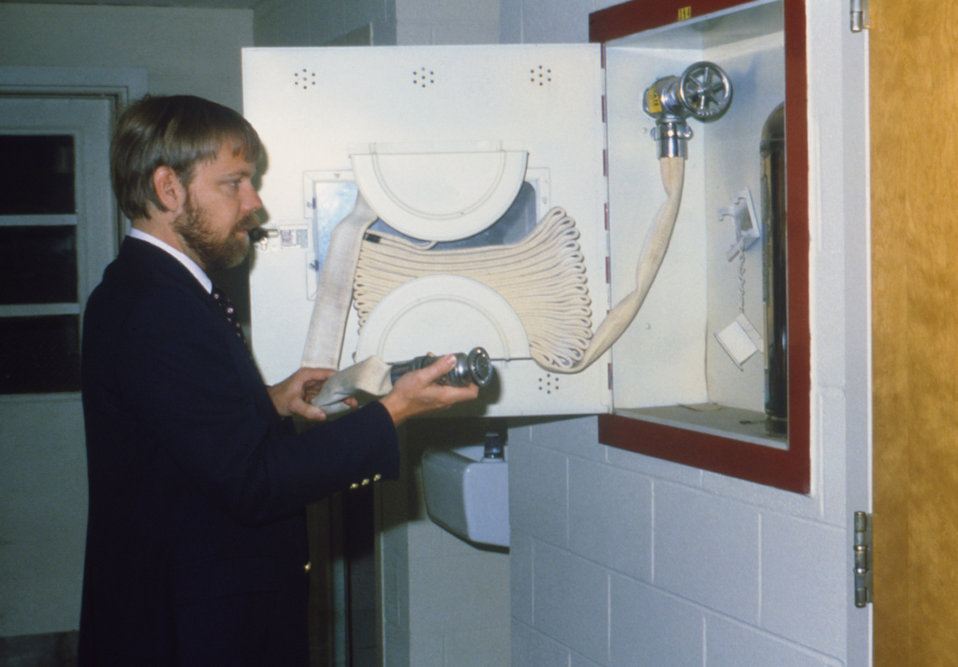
This was former member of the US Public Health Service, William Wagner, ScD, conducting a CDC/ NIOSH laboratory safety study.